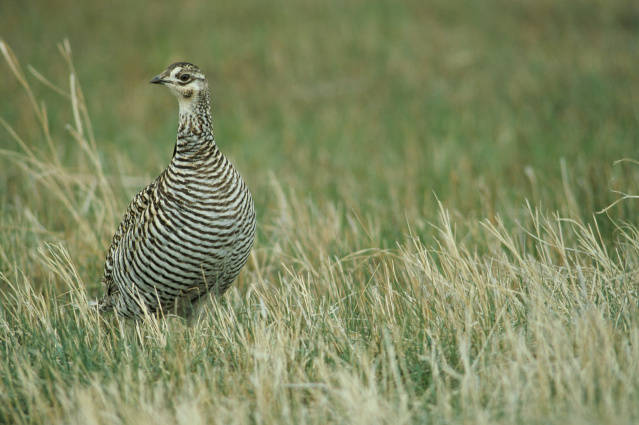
greater prairie chicken